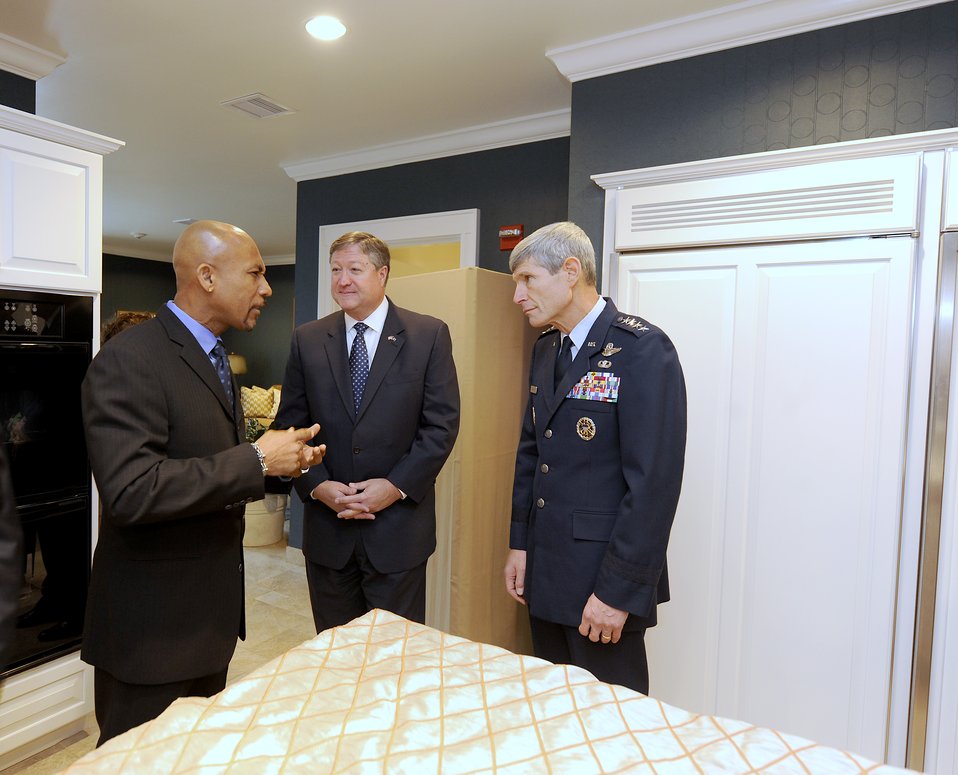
Dover AFB Fisher House Dedication

Celebrity talk show host Montel Williams talks with Secretary of the Air Force Michael Donley and Air Force Chief of Staff Gen. Norton Schwartz at Dover Air Force Base, Del., on Nov. 10, 2010. The three helped dedicate the new Fisher House for Families of the Fallen during a ceremony there.